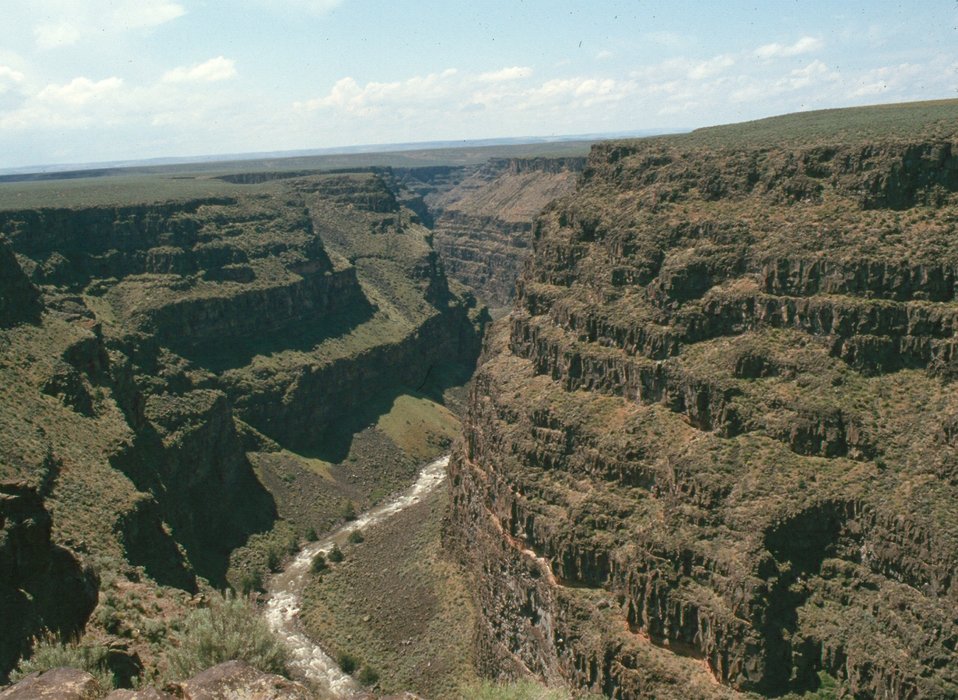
Bruneau Canyon Jarbridge Field Office LSRD Lower Snake River District